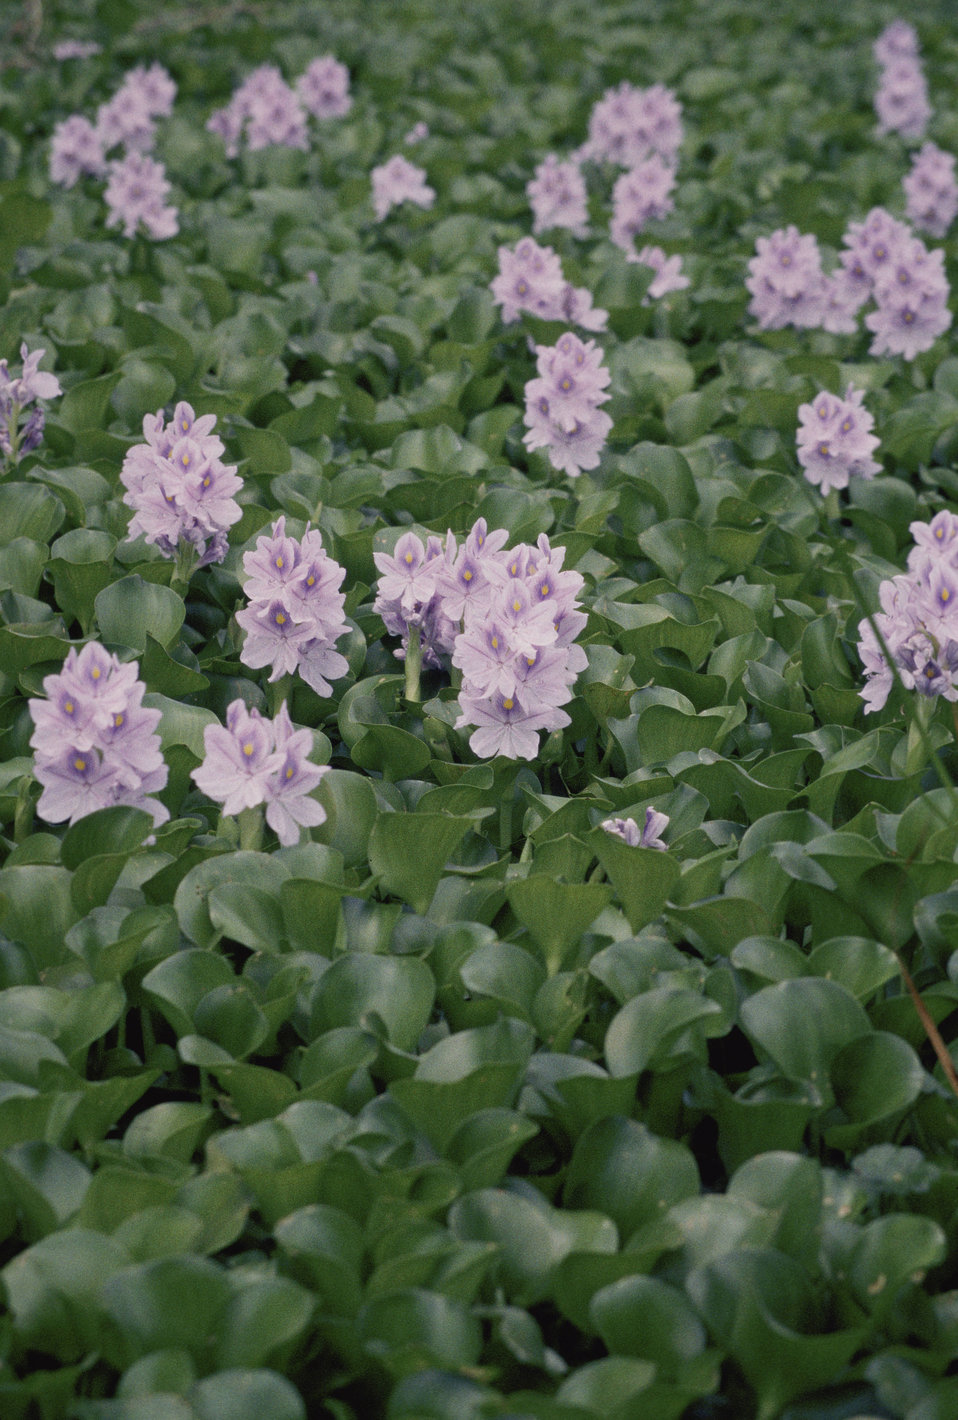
Water Hyacinth

Photo credit: USFWS/V. Ramey

Water hyacinth produces vast, thick mats that clog waterways, crowding out native plants and making boating, fishing, and swimming almost impossible. Because water hyacinth cannot survive when winter temperatures drop below freezing, climate change will only make the problem worse. Rising temperatures will allow this pest to invade new areas, and the plant will likely spread north.